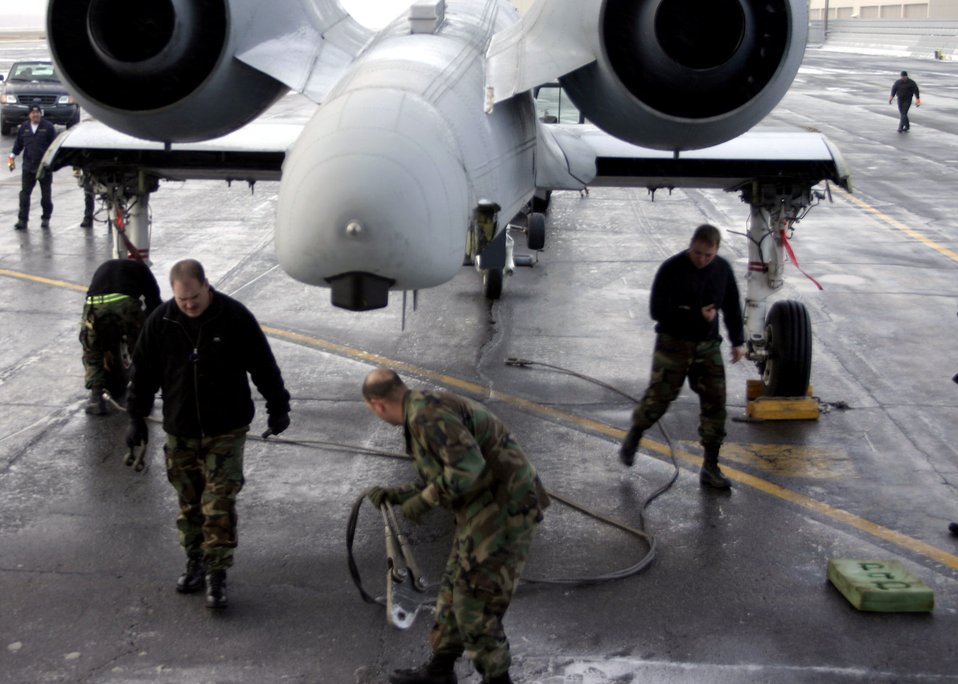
Eielson's last A-10 nestles into new home

Master Sergeants Timothy McIntosh and David Pearson, Staff Sgt. William Neely and Senior Airman Austin Mauch work together to hook up winch cables as the inactive A-10 Thunderbolt II used for ground training is being prepared for loading into a C-5 Galaxy Oct. 6 at Eielson Air Force Base, Alaska. The inactivated A-10 was dismantled into six separate parts for transport to Robbins Air Force Base, Ga., to be used as a static display in front of the Museum of Aviation Flight and Technology Center. Sergeants McIntosh and Pearson are assigned to the 354th Aircraft Maintenance Squadron, and Sergeant Neely and Airman Mauch are from the 354th Maintenance Squadron.